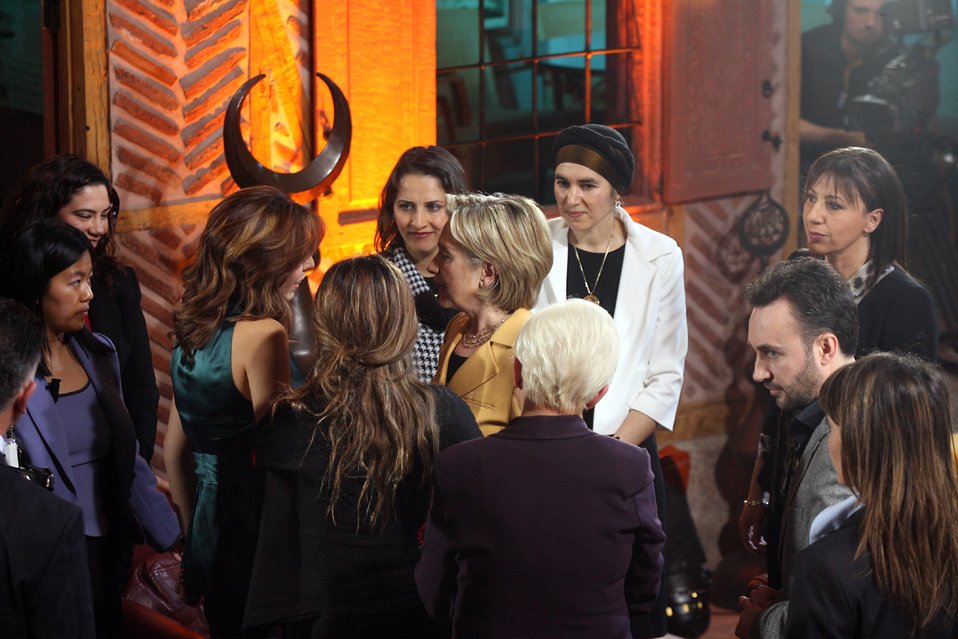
'Come and Join Us” Television Program

U.S. Secretary of State Hillary Rodham Clinton talks with audience members after taping of NTV show “Come and Join Us”, Rahmi Koc Museum, Ankara, Turkey March 7, 2009.